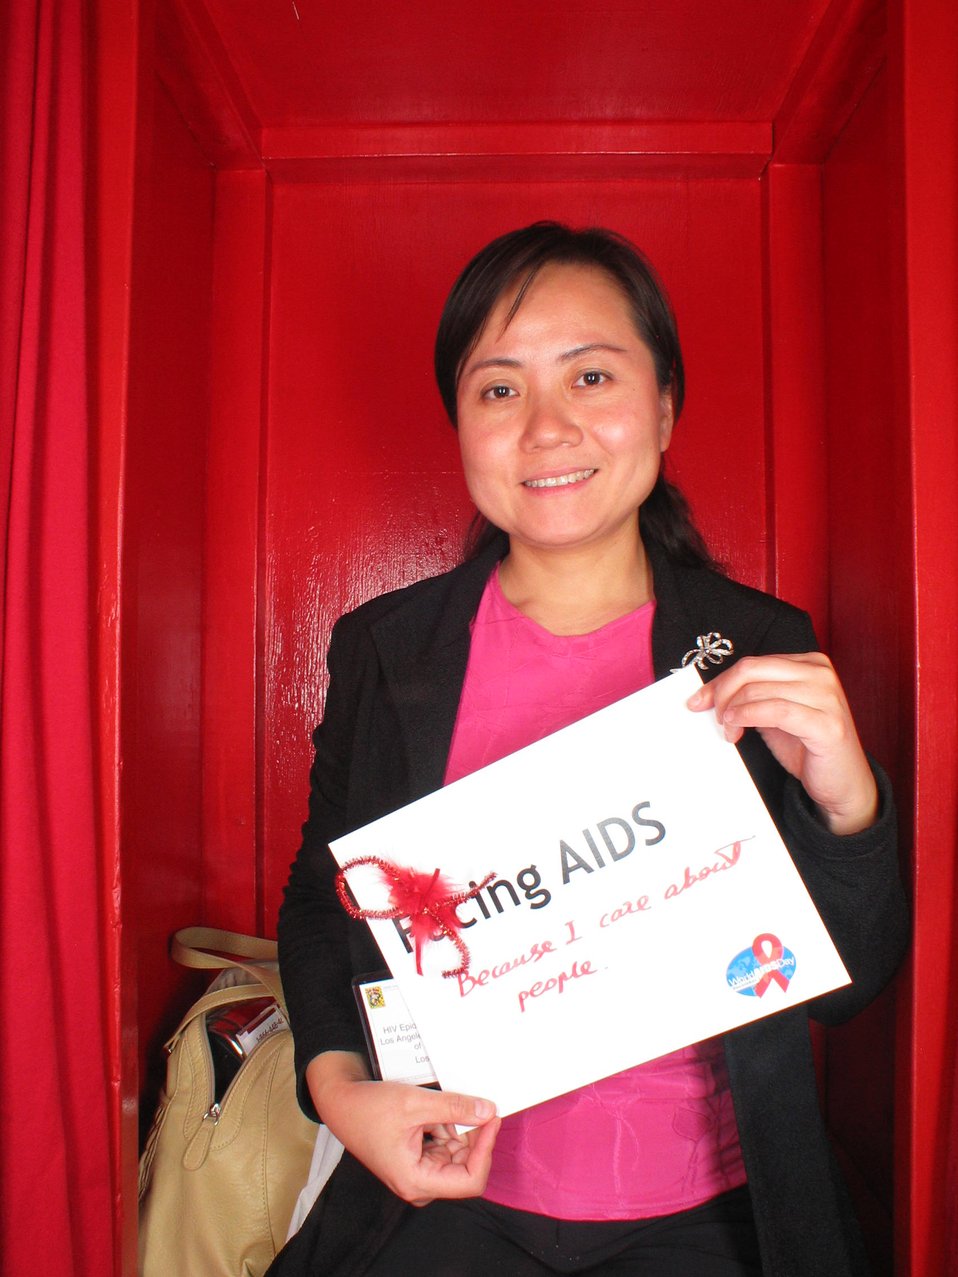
Facing AIDS because I care about people.